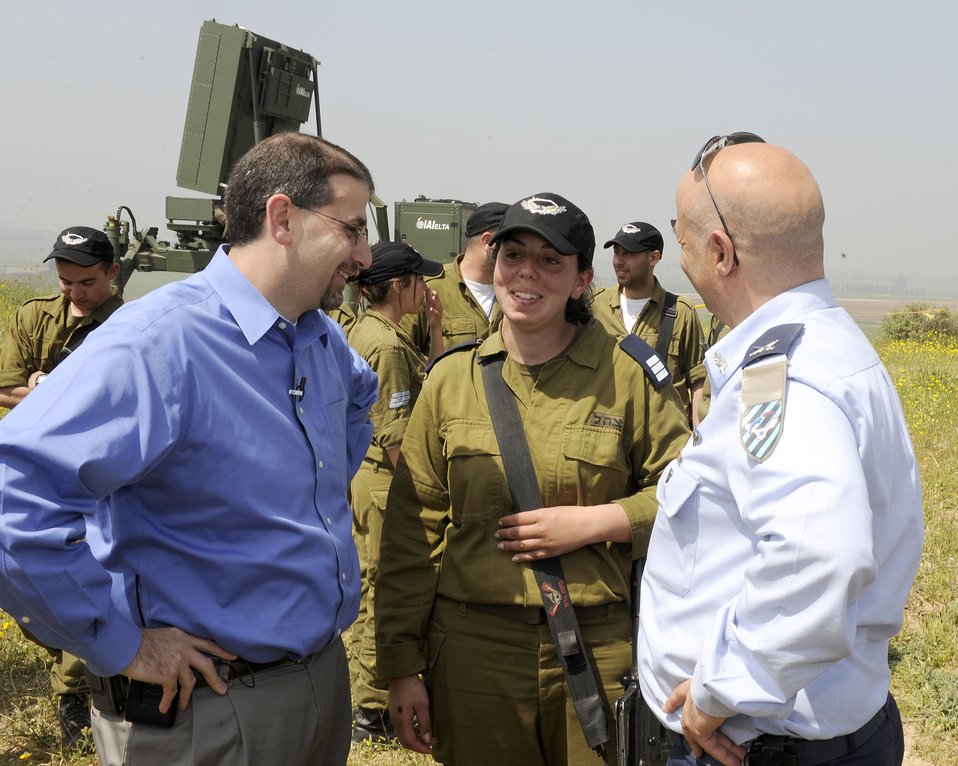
Ambassador Shapiro Meets With Israeli Soldiers

U.S. Ambassador to Israel Daniel Shapiro meets with Israeli Air Force Air Defense Forces Commander Brig Gen. Doron Gavish, battery commander Capt. Revital Uzan, and battery soldiers during his visit to the site of the newly-deployed Iron Dome battery in southern Israel on April 5, 2012.